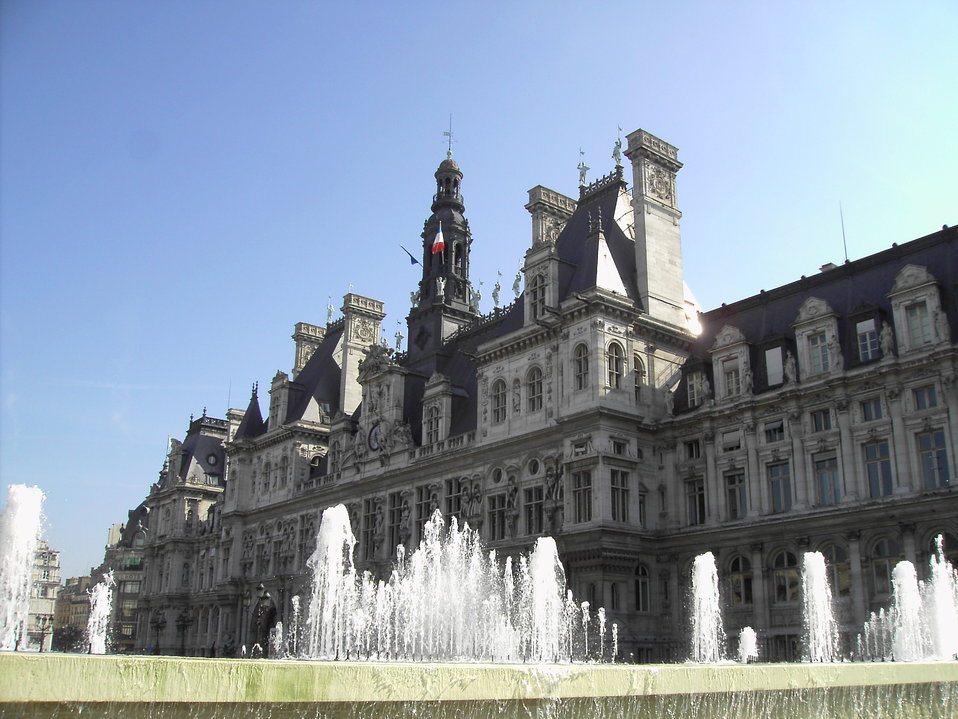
050903 Paris 011 HotelVille fontana